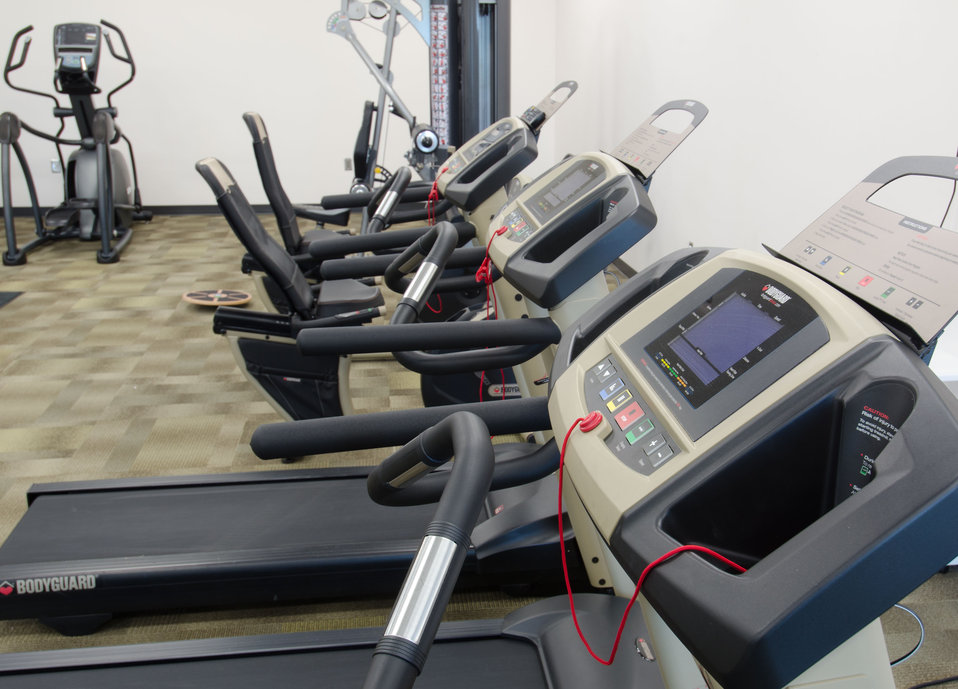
Exercise room at Unilife, a medical device company focused on the design, development, manufacture and supply of a proprietary range of retractable syringes on Monday, April 20, 2011 in York, PA.. In partnership with Sanofi-aventis, Mikron Group, and MDMA, U.S. Department of Agriculture Rural Development was able to guarantee $18,000,000 through its Business and Industry Guaranteed Loan Program to construct a custom-built, global headquarters and commercial production facility in York, Pennsylvania. The 165,000 sq. ft. facility was completed in late 2010 and can accommodate future growth as well as the Company’s projected demand from pharmaceutical and healthcare companies for its proprietary range of Unifill ready-to-fill (prefilled) and Unitract general purpose safety syringes. Stage one of the facility is designed to accommodate the production of up to 400 million Unilife syringes per year and to meet stringent pharmaceutical standards for primary drug containers. Adjacent to the manufacturing facility is Unilife’s global headquarters that support administrative, marketing, new product development, quality laboratories and other operational functions. Unilife, which first arrived in Pennsylvania in 2006. The company has doubled its employees for the past three years. There are approximately 150 employees, and they expect to double the number by 2015.